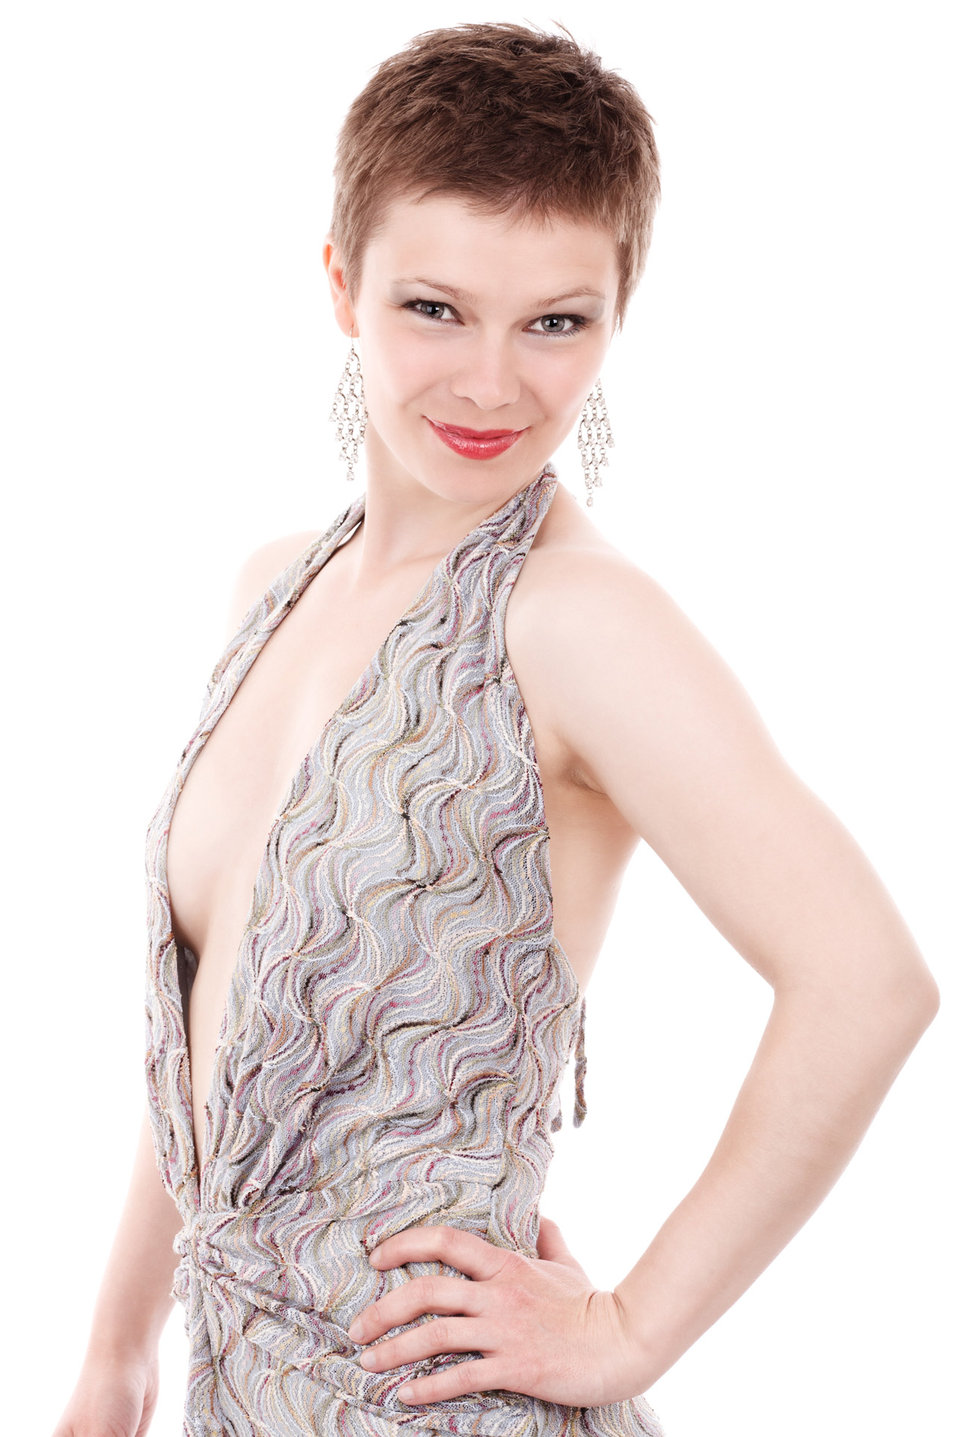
Female model isolated

Young female fashion model posing in her dress isolated on white background.